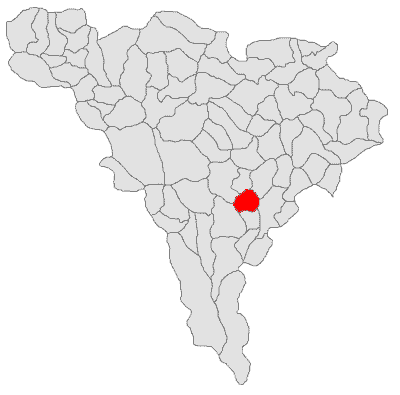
ro:Categorie:Hărţi ale judeţului Alba